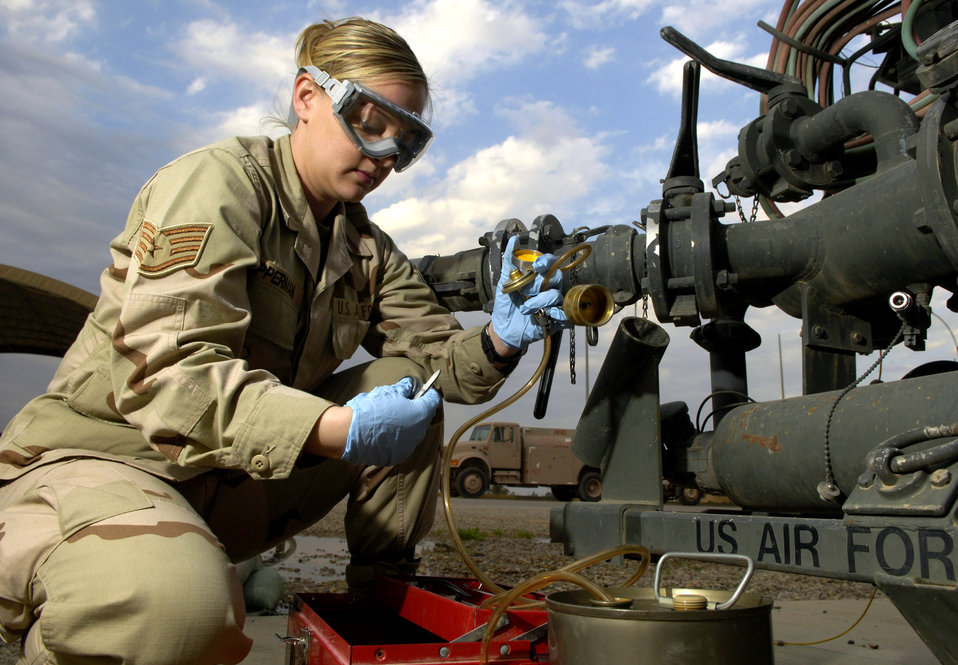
Checking the quality

Staff Sgt. Kara Opperman performs a quality control check on fuel coming out of a fill stand at Balad Air Base, Iraq. Sergeant Opperman ensures the fuel is safe and meets Air Force specifications before it is used in aircraft and equipment.